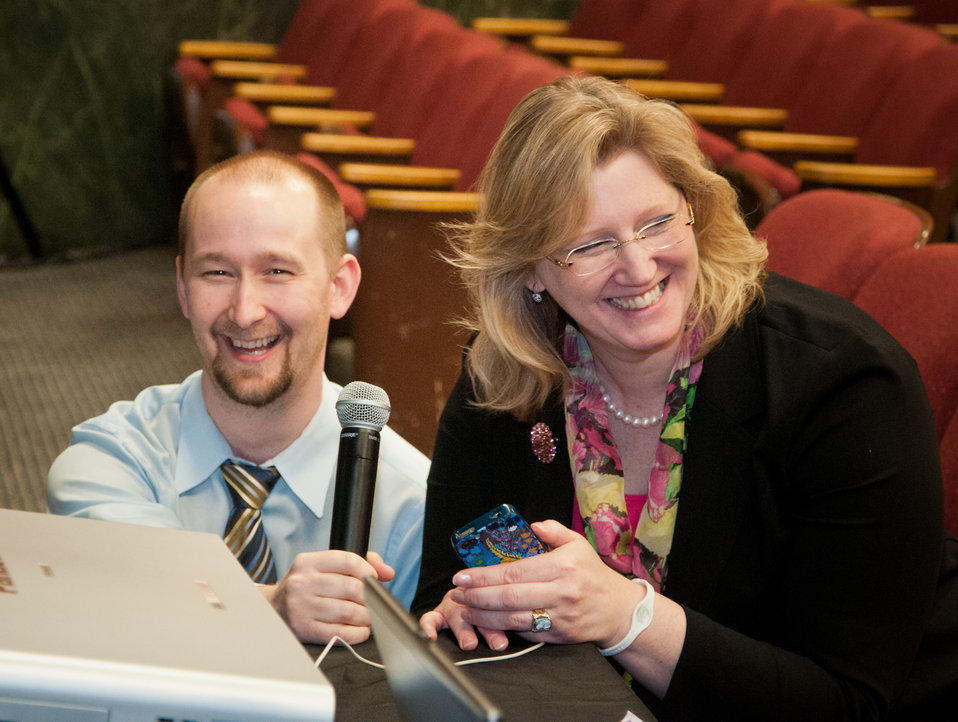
Office of Personnel Management (OPM) Diversity and Inclusion Program Manager Michael Murray and U.S. Department of Agriculture (USDA) Office of Human Resources Management (OHRM) Disability Employment Program Manager Alison Levy Alison Levy share a laugh during USDA’s OHRM Disability Employment Program Team Training at USDA in Washington, D.C. on Tuesday, May 14, 2013.